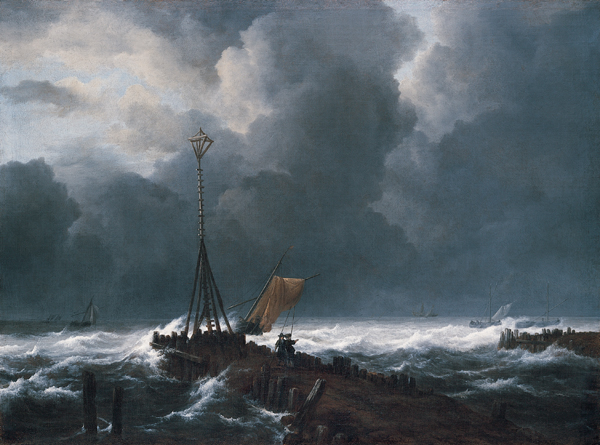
'Rough Sea at a Jetty', oil on canvas painting by Jacob van Ruisdael, 1650s